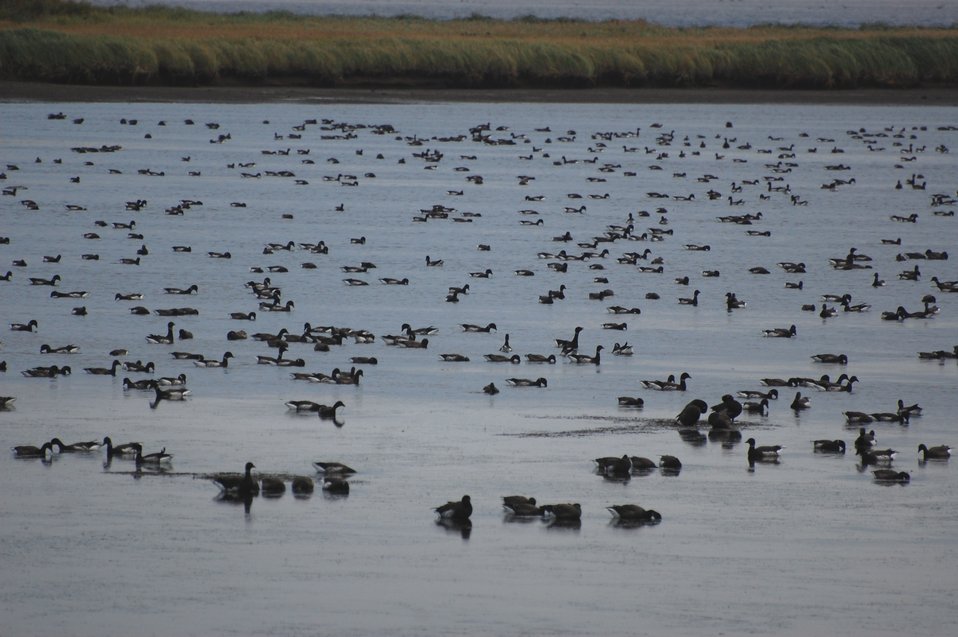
Brant, Izembek Lagoon, Izembek National Wildlife Refuge